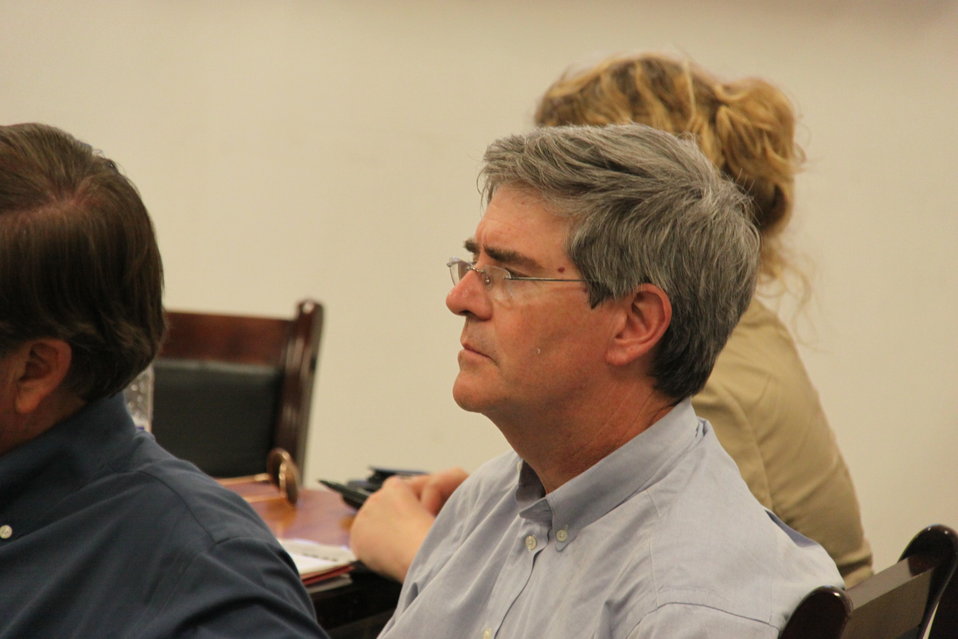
Meeting with Local Leaders in Kandahar